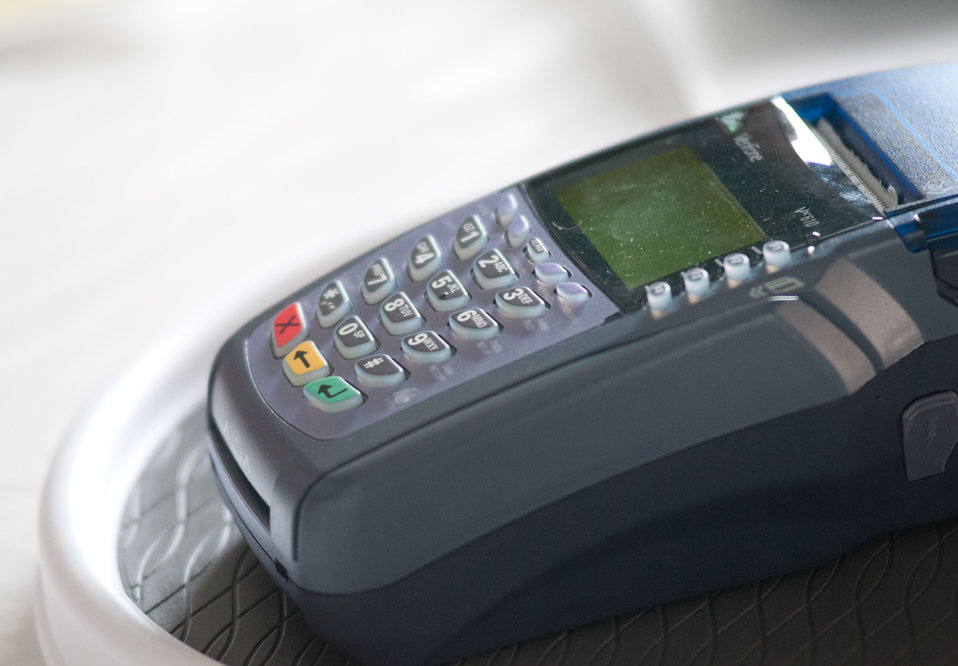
This electronic card reader using a wireless connection allows consumers to use the U.S. Department of Agriculture’s (USDA) Food Nutrition Service’s (FNS) Supplemental Nutrition Assistance Program (SNAP) Electronic Benefits Transfer (EBT) cards, Baltimore Bucks, and debit cards for Baltimore’s Farmers Market and Bazaar tokens in Baltimore, MD on Sunday, July 8, 2012. Today marked the new wireless capability that supports portable terminal use to accept “SNAP participation at farmers markets helps provide fresh fruit and vegetables to families and expands the customer base for local farmers in the Delmarva area, a win-win for agriculture and local communities,” said Agriculture Deputy Secretary Kathleen Merrigan. “And when we couple SNAP access at farmers' markets with strategies like education, cooking demonstrations, and community support in the Baltimore area, consumption of healthy foods has potential to grow even more.”